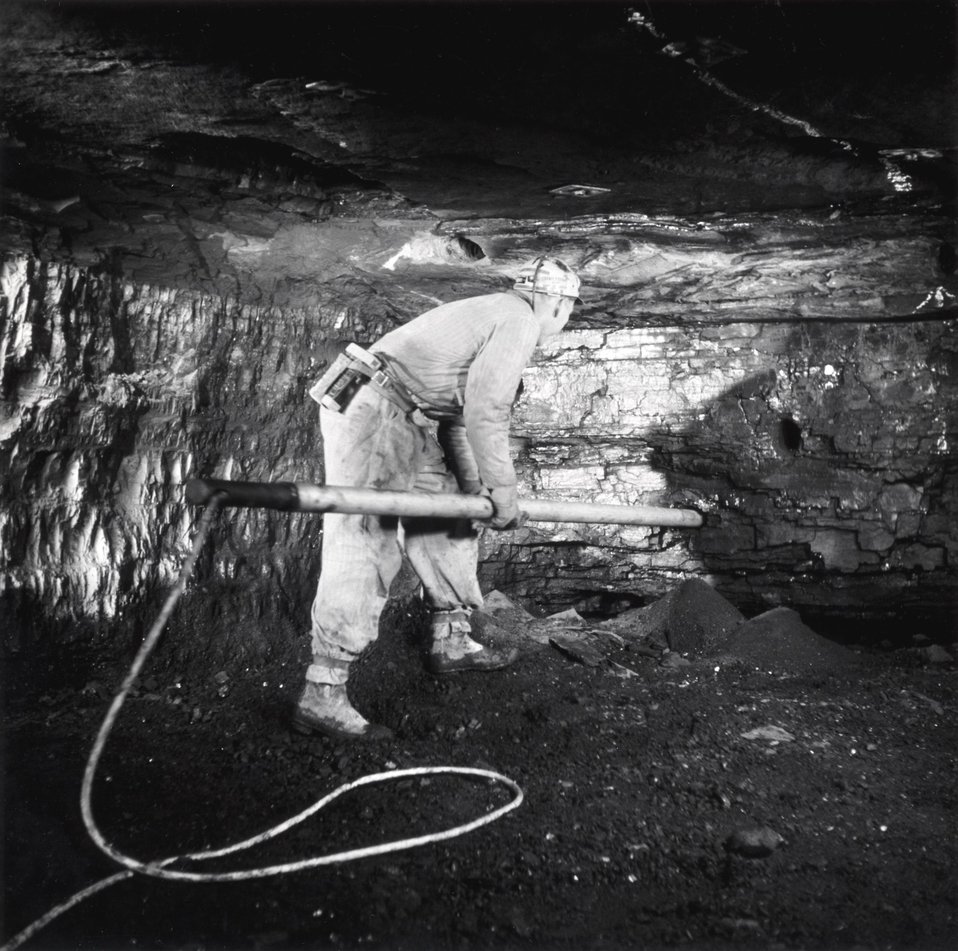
A miner inserts a compressed air cartridge into a hole drilled in the face of the coal seam. c. 1964